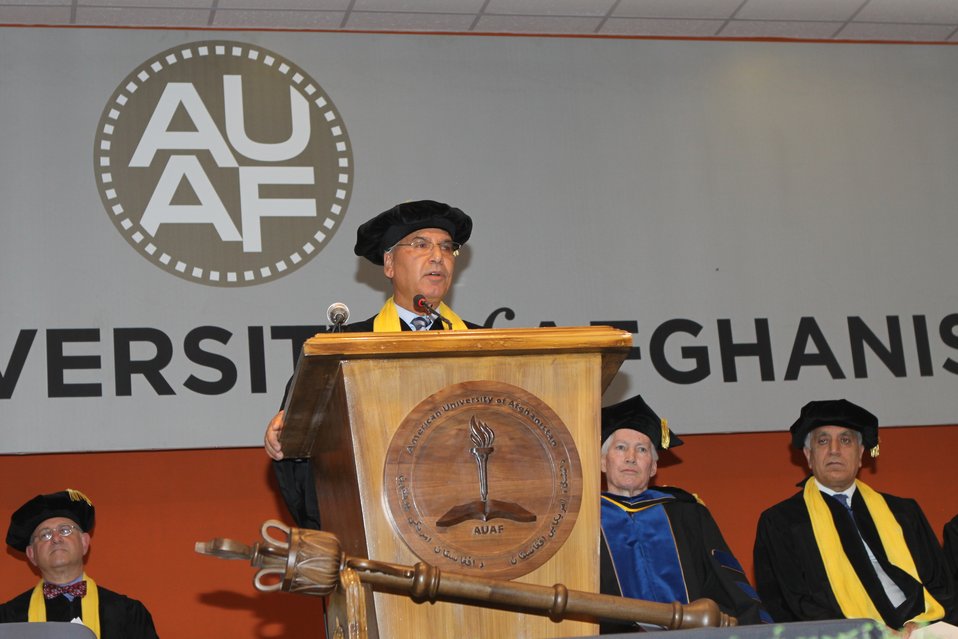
100526 AUAF Graduation 148